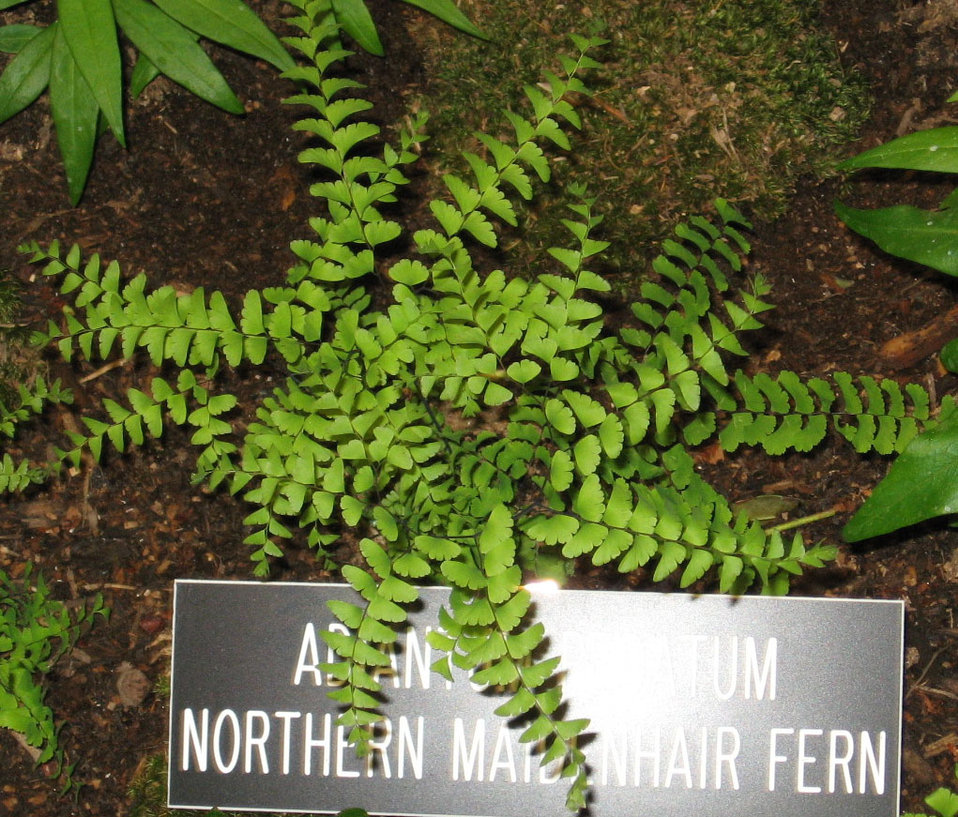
Maidenhair fern

Adiantum pedatum (Maidenhair fern), a native plant

Learn more about EPA’s Exhibit at the 2010 Philadelphia International Flower Show:
www.epa.gov/reg3esd1/garden/flower show.htm
www.epa.gov/reg3esd1/garden/flower show plants.htm
www.epa.gov/reg3esd1/garden/pdf/flowershow2010.pdf (6 pp, 864K)